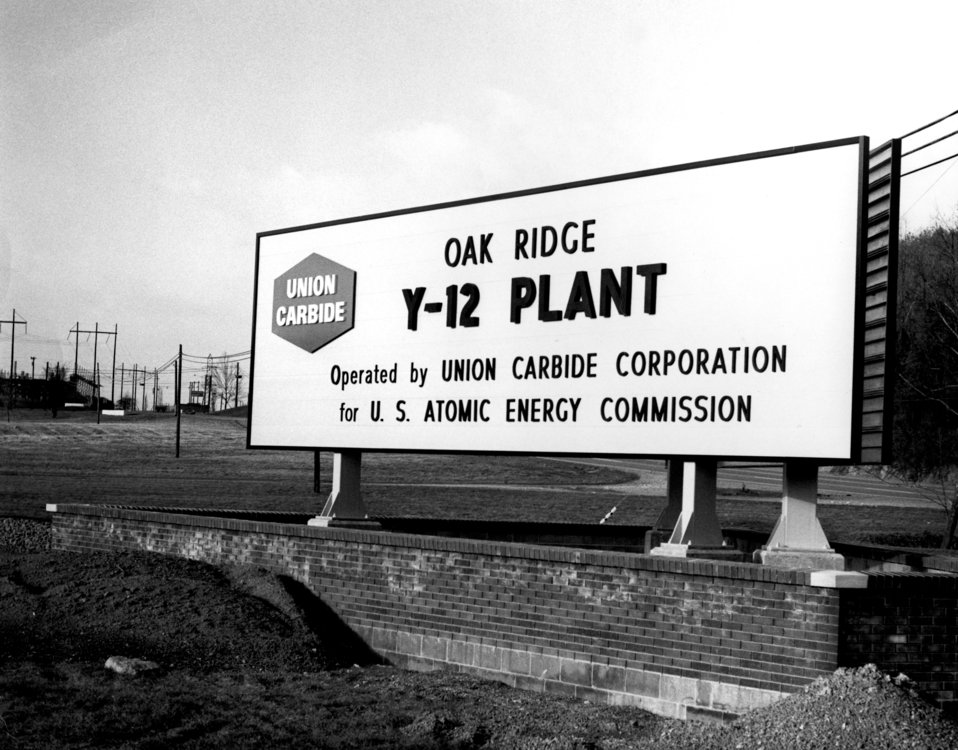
Y-12 Plant Sign Oak Ridge 1971

71-01 DOE photo W.E. Hall 1-19-1971 Oak Ridge Tennessee